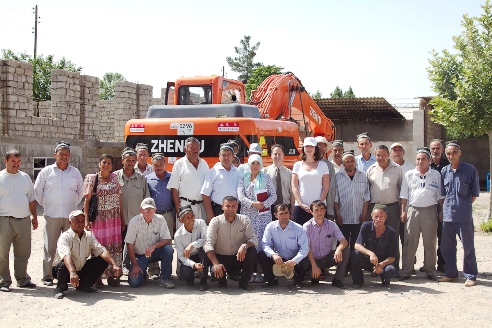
U.S. and Tajik Representatives Participate in a Handover Ceremony

USAID/Tajikistan Jeffrey Lehrer, Deputy Chairman of Qubodiyon District Ergashev Ziyodali, Tajik Head of Water Users Associations Support Department of the Ministry of Melioration and Water Resources Eshmirzoev Ismat, representatives of Tajik water users associations, and WUASP staff participate in a handover ceremony in which the U.S. government, through the Water User Association Support Program (WUASP) funded by the U.S. Agency for International Development (USAID), donates a wheeled excavator to the Federation of Water Users Associations “Sarob” in Qubodiyon district of Khatlon Oblast in Tajikistan on May 24, 2011.